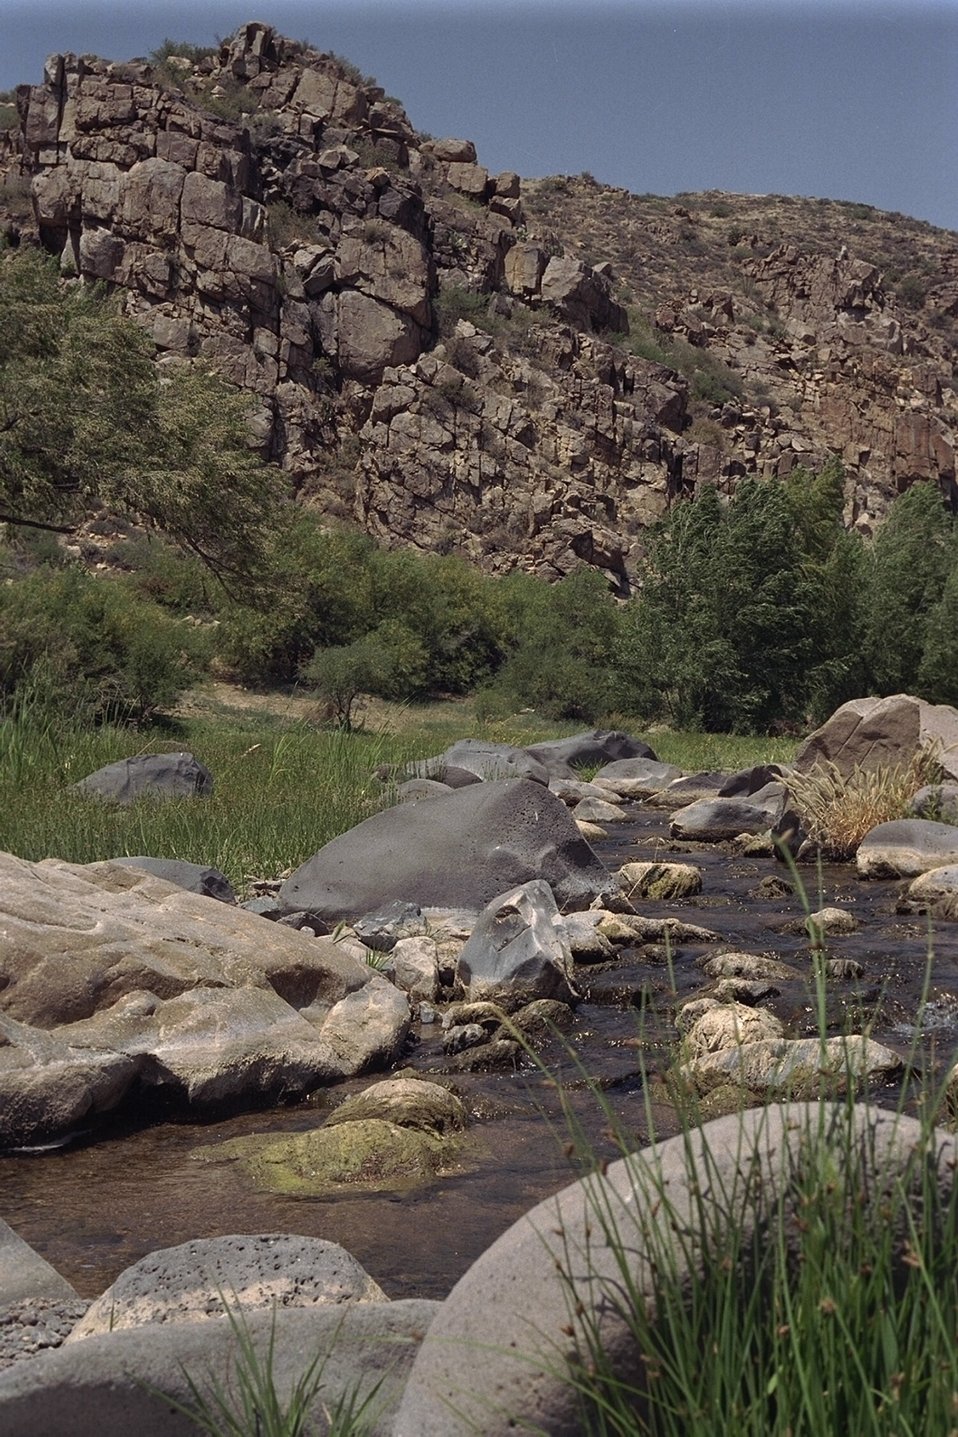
The Agua Fria River runs through the canyon that shares its name.